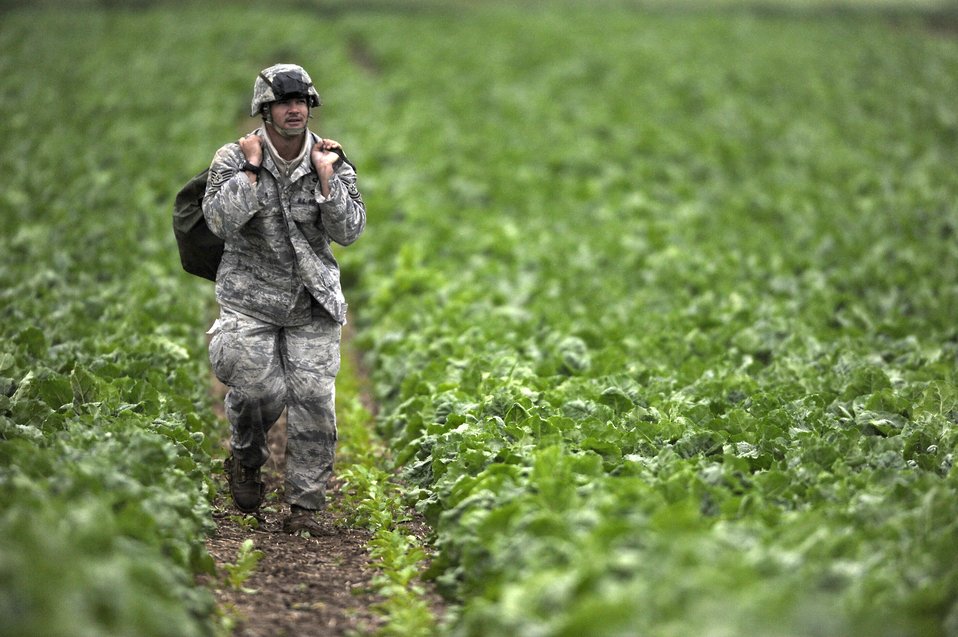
NATO Jump Week 2010

A servicemember carries his gear after parachuting from a C-17 Globemaster III June 17, 2010, over drop zone at Alzey, Germany, during International Jump Week 2010. Five NATO countries participated in the annual event to support one of United States Air Forces in Europe's top priorities building partnership.